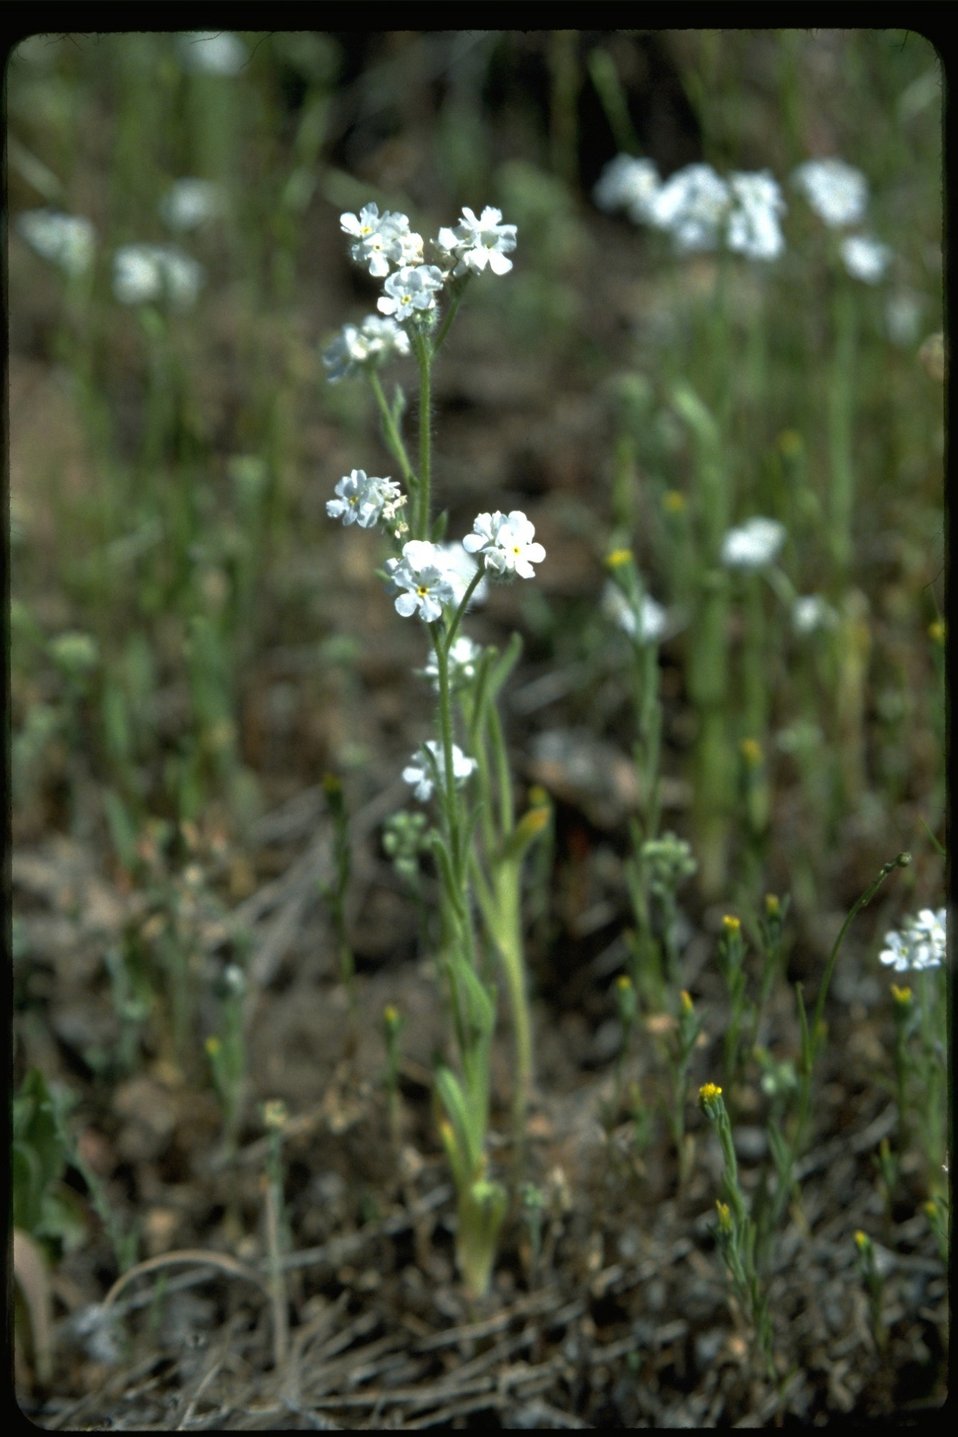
Medium shot of Popcorn flower.